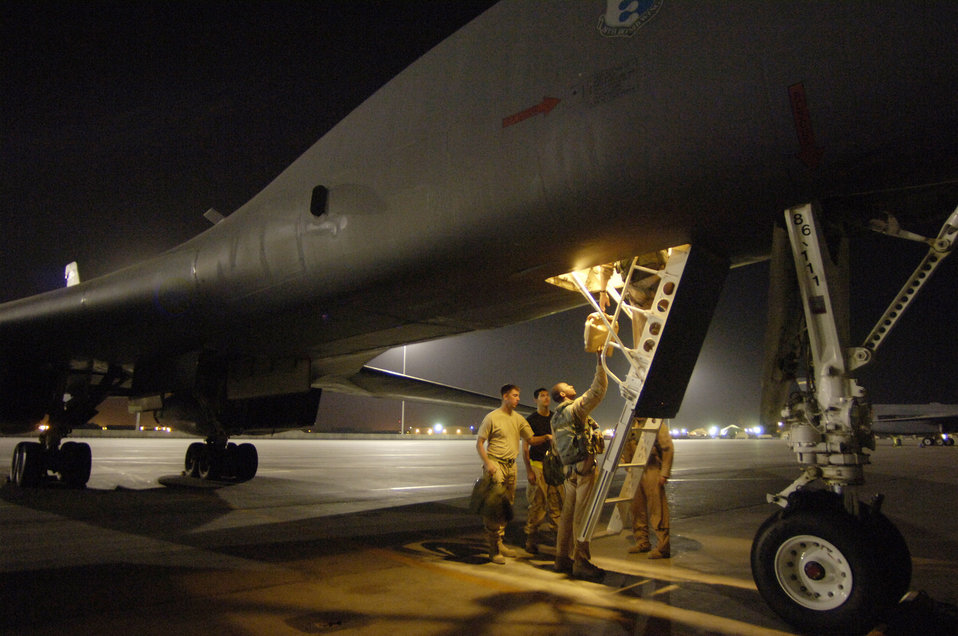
Prepping for a mission

Capt. Cedric Harper passes up food and survival equipment to another B-1B Lancer crewmember Sept. 28 that will be used during a 12-hour sortie over Southwest Asia. Captain Harper is a weapons system officer on the bomber. The aircrew is deployed to Southwest Asia from Ellsworth Air Force Base, S.D.